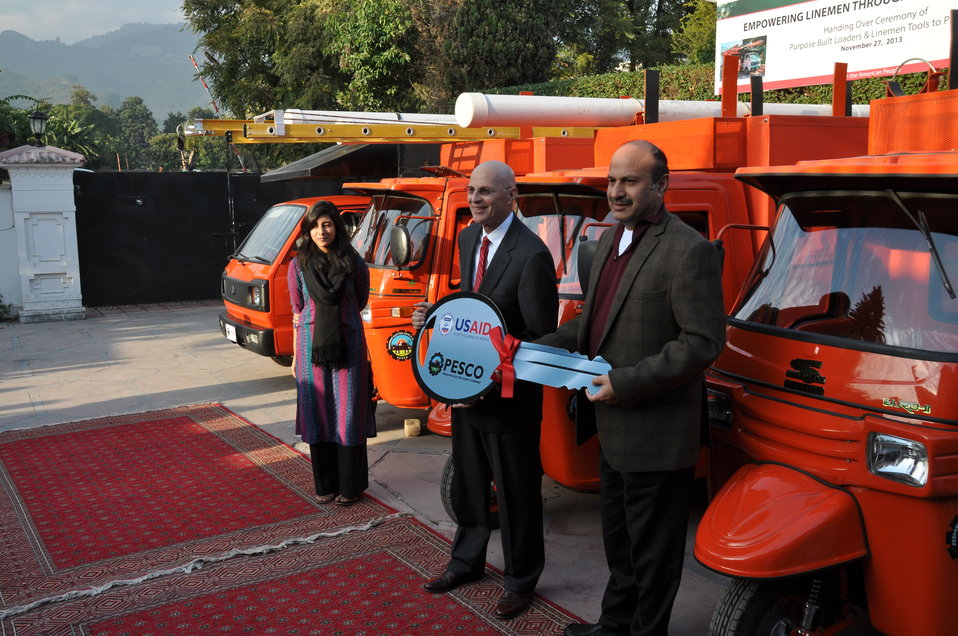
United States Government Strengthens PESCO Field Operations 10